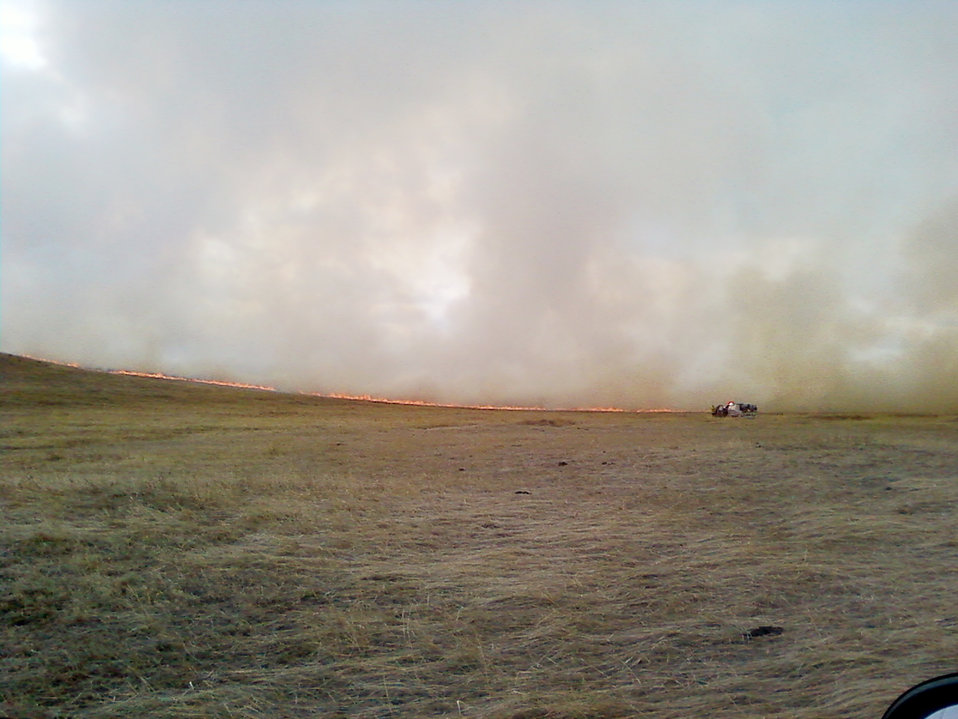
F.E. Warren members help fight brushfire in Wyoming

A brushfire blazes two miles southwest of F.E. Warren Air Force Base, Wyo., March 31, 2010. The Warren Fire Department, Laramie County Fire Districts 1,2,8 and 10, as well as the Wyoming Air National Guard responded to the incident.